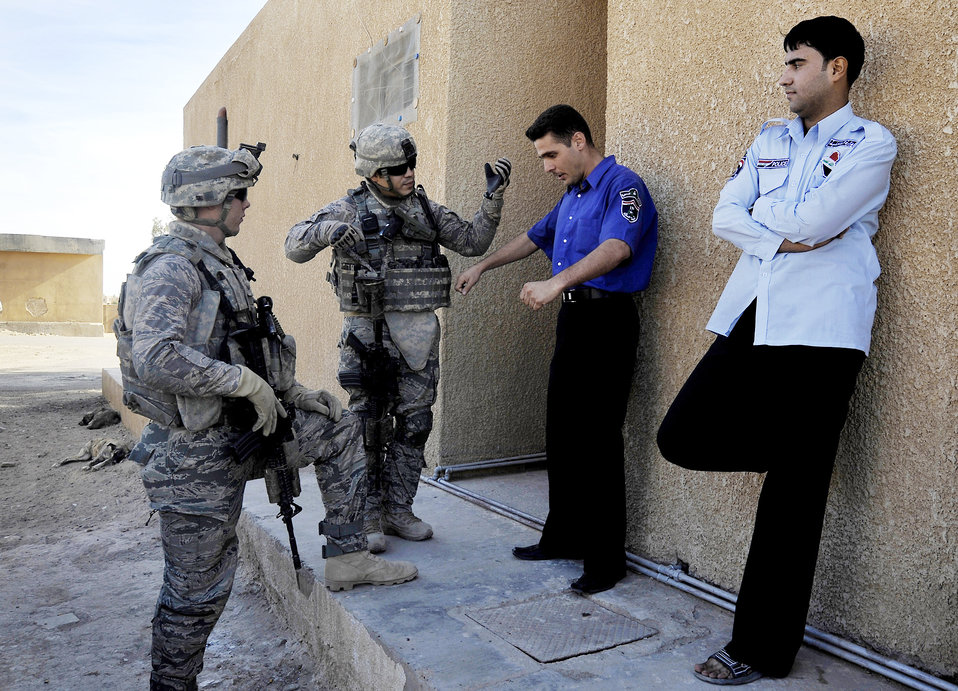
Airmen mentor Iraqi police officers

Staff Sgts. Zachary Hoover and Julis Matos speak with Iraqi police outside one of their local stations, Nov. 15, 2009, at Baghdad, Iraq. Sergeants Hoover and Mato are 732nd Expeditionary Security Forces Squadron Det. 2 fire team members deployed to Baghdad, Iraq.